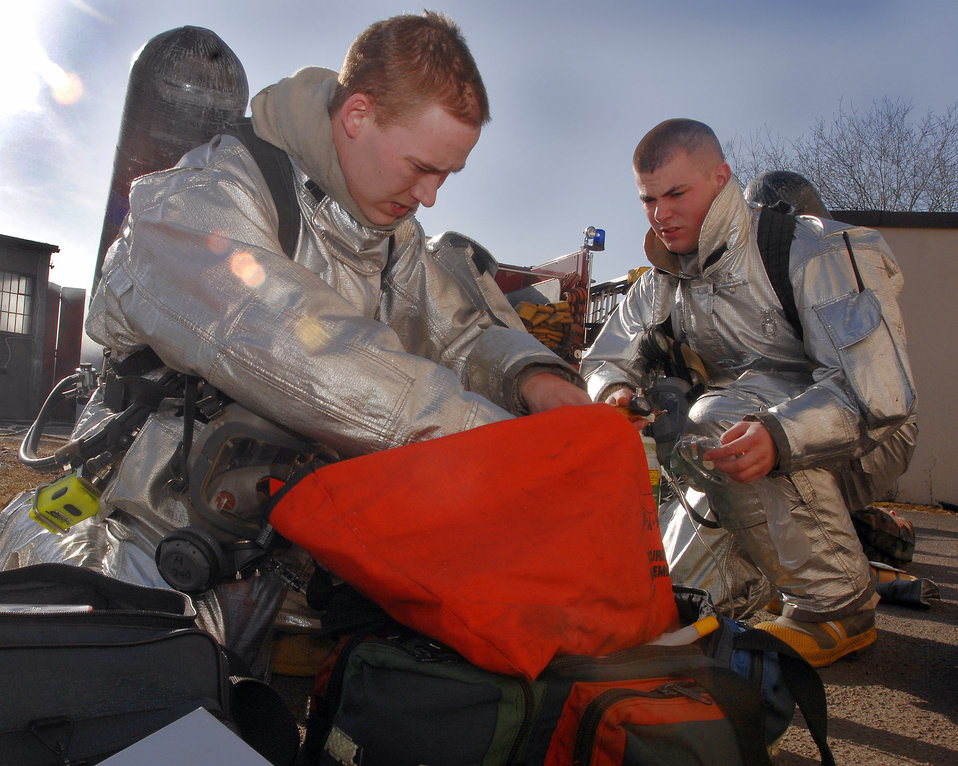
Ramstein firefighters train in mass casualty exercise

Firefighters participate in a mass casualty exercise Feb. 11 at Ramstein Air Base, Germany. The scenario involved victims trapped in a burning building.